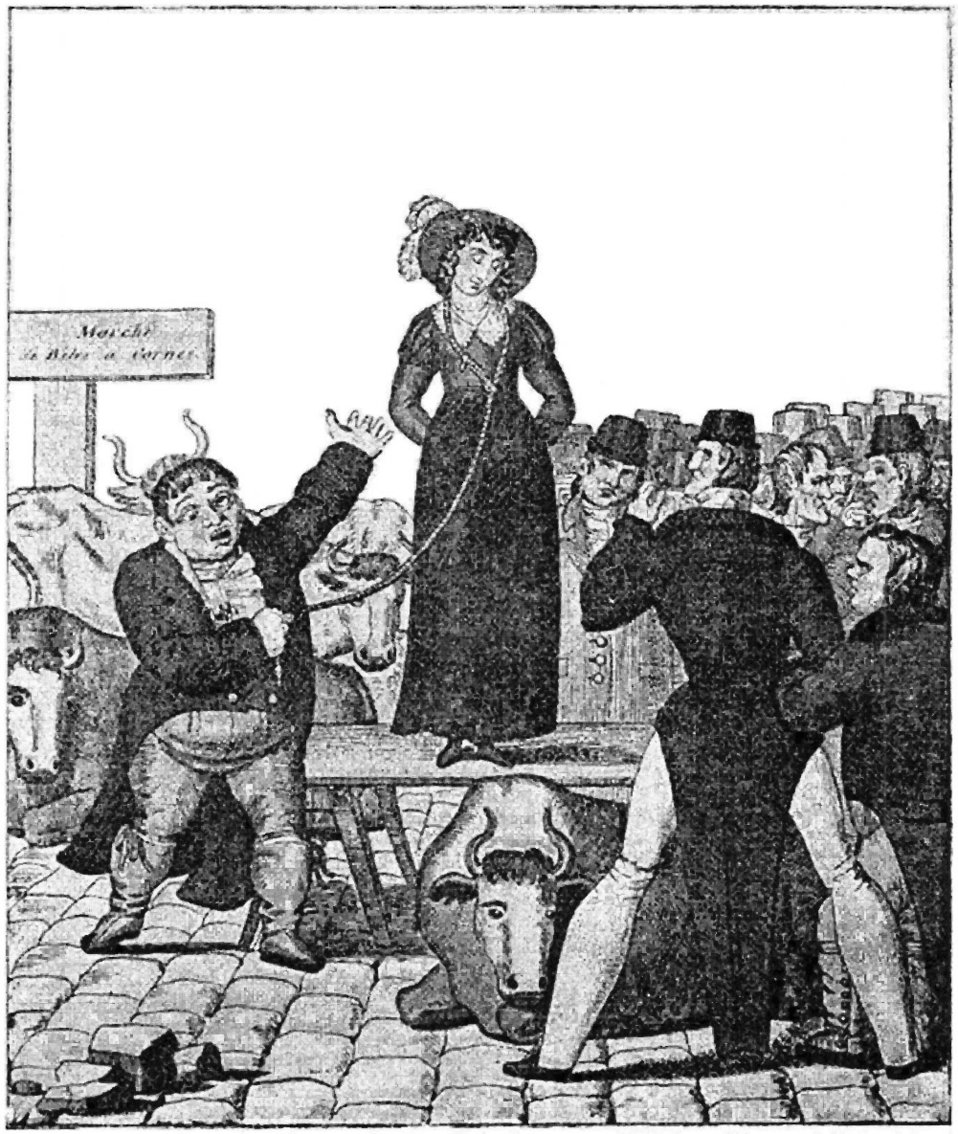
A satirical engraving of the quaint English custom of 'wife-selling', which wasn't quite what it sounds like, but was more a ritual among the lower classes — who couldn't possibly obtain an official full parliamentary divorce, allowing remarriage, given the laws of England as they existed before 1857 — to publicly proclaim a dissolution of marriage (though not one that was really recognized by the authorities of Church and State). This is an 1820 English caricature (even though the sign says 'Marché de Bêtes à Cornes'). Notice how the artist has arranged things so that the cattle's horns are strategically placed in line-of-sight behind the husband's head.